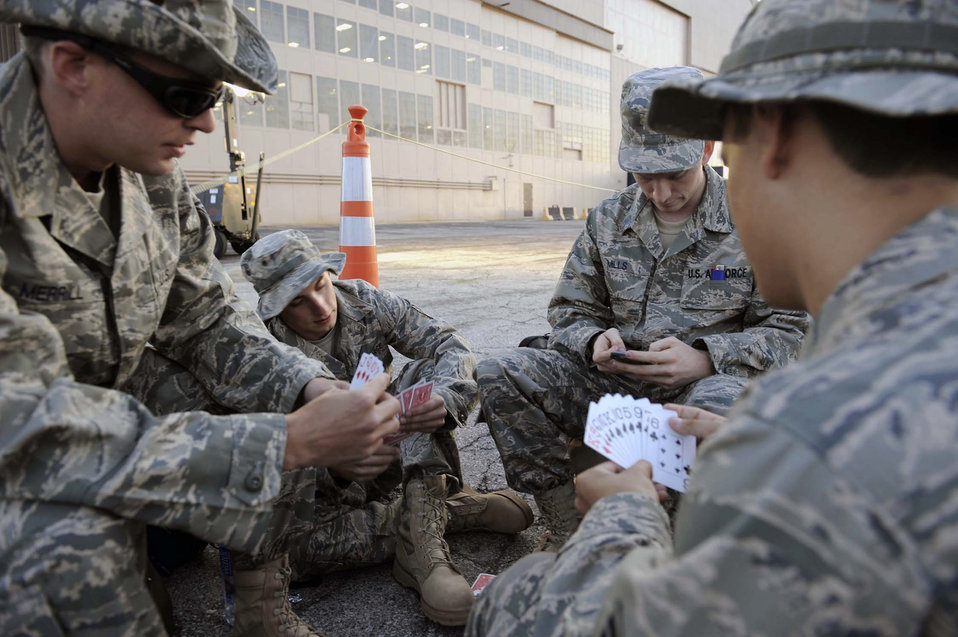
Airmen deploy to Southwest Asia

Airmen from the 28th Bomb Wing keep busy playing cards before deploying from Ellsworth Air Force Base, S.D. Airmen representing various specialties deployed in support of operations in Southwest Asia.